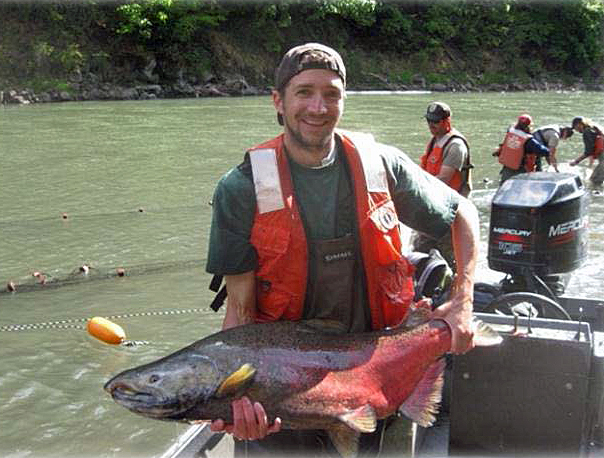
White SalmonWSR016

U.S. Forest Service fisheries biologist Jeff Jolley returns with a White Salmon River fall Chinook salmon in Washington on Jan. 25, 2013. Removal of the 100-year-old Condit Dam opened new spawning and rearing grounds for salmon and to steelhead. The river is one of 119 wild and scenic rivers managed by the U.S. Forest Service.